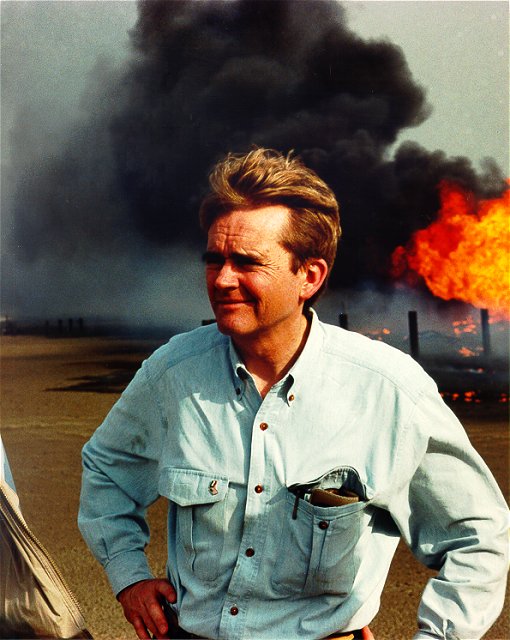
Kuwait oil fires

Administrator Reilly assesses environmental damage of oil fires set by Iraqi forces in Kuwait.

Read more about the eco terrorism in Kuwait.